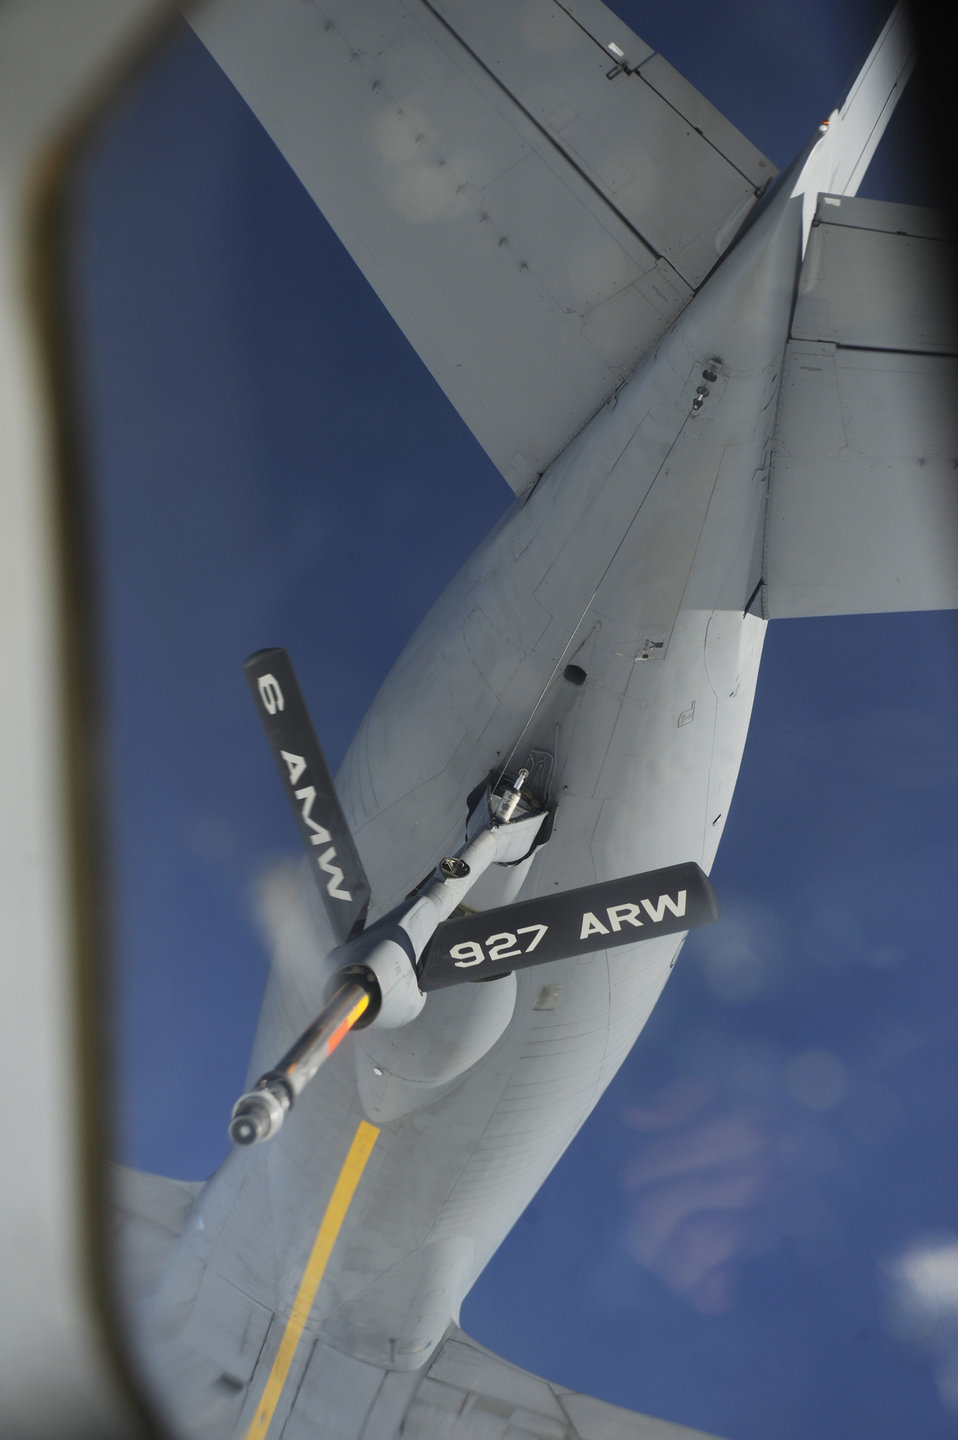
Charleston aircrew refuel near MacDill

A KC-135 Stratotanker from MacDill Air Force Base, Fla. stabilizes to prepare for air refueling operations during a training mission March 12, 2010, near MacDill Air Force Base, Fla.